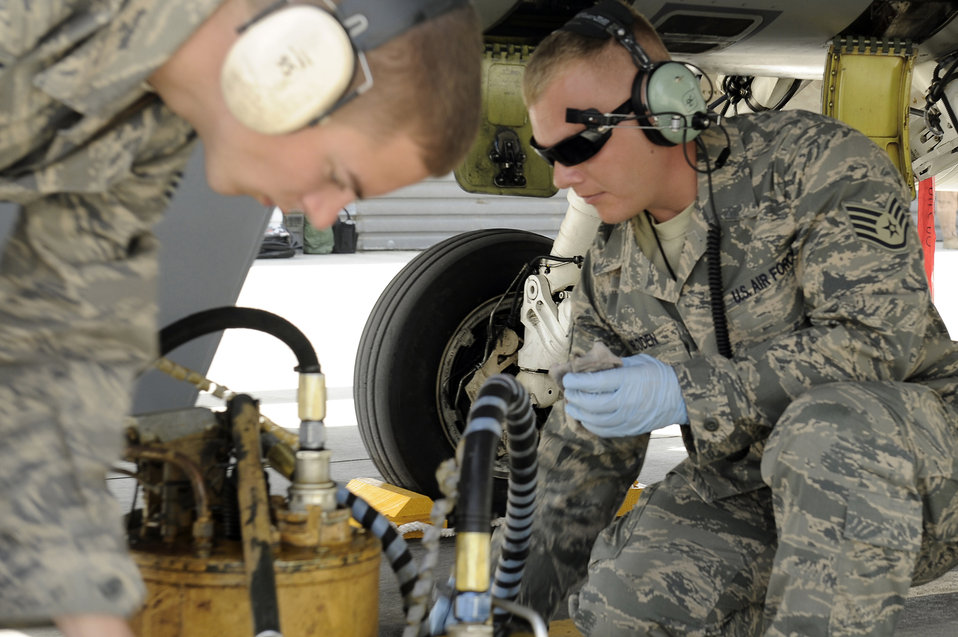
30 Code 1 flights

Senior Airman Anthony Creasey (left) and Staff Sgt. Lucas Inboden, maintainers from the 34th Expeditionary Fighter Squadron at Bagram Airfield, Afghanistan, recover an F-16 Fighting Falcon March 23, 2010, after it completed its 30th code 1 flight, meaning no maintenance write-ups for 30 flights in a row. The Airmen are deployed from Hill Air Force Base, Utah.